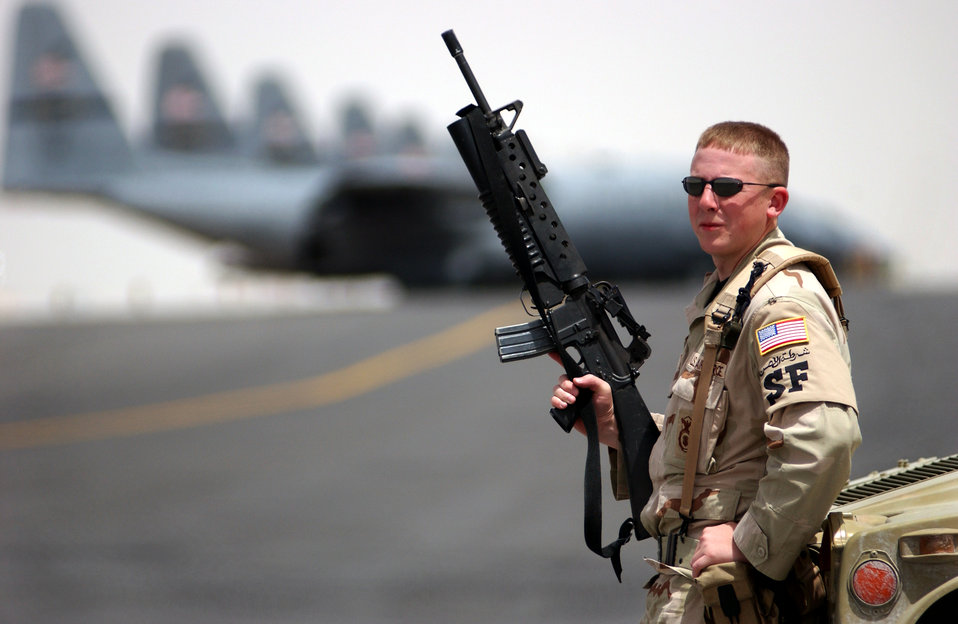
Hercs on the move

OPERATION IRAQI FREEDOM -- Staff Sgt. Brett Duncan keeps watch on the flightline at a forward-deployed location in Southwest Asia. The C-130 Hercules on the line arrived May 3 to help with stabilization efforts inside Iraq. Duncan is assigned to the 379th Expeditionary Security Forces Squadron.